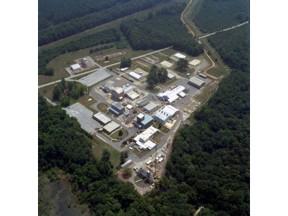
Savannah River T-Area

An aerial photo of Savannah River T-Area before cleanup activities had begun.